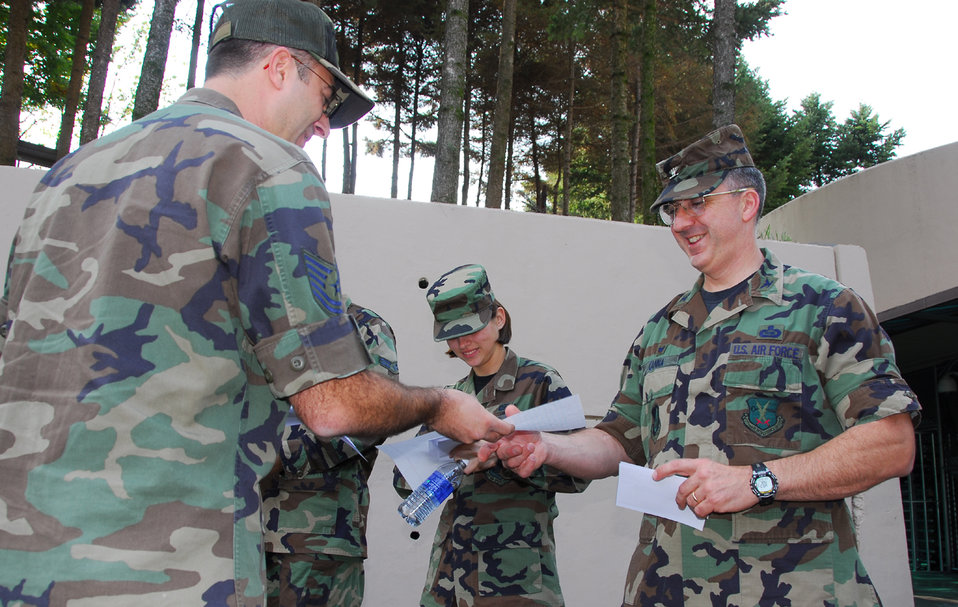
By the letter: Airmen help students by being pen pals

Tech. Sgt. C.J. Baker hands a letter to Col. Michael Canna Oct. 26 at Osan Air Base, Republic of Korea. Sergeant Baker, along with Florerence, S.C., teacher Veronica Flowers, started a project in which Ms. Flower's 20 2nd grade students will be pen pals for one year with Osan Airmen. Sergeant Baker is with the 607th Air Intelligence Squadron and Colonel Canna is the 607th Air Intelligence Group commander.